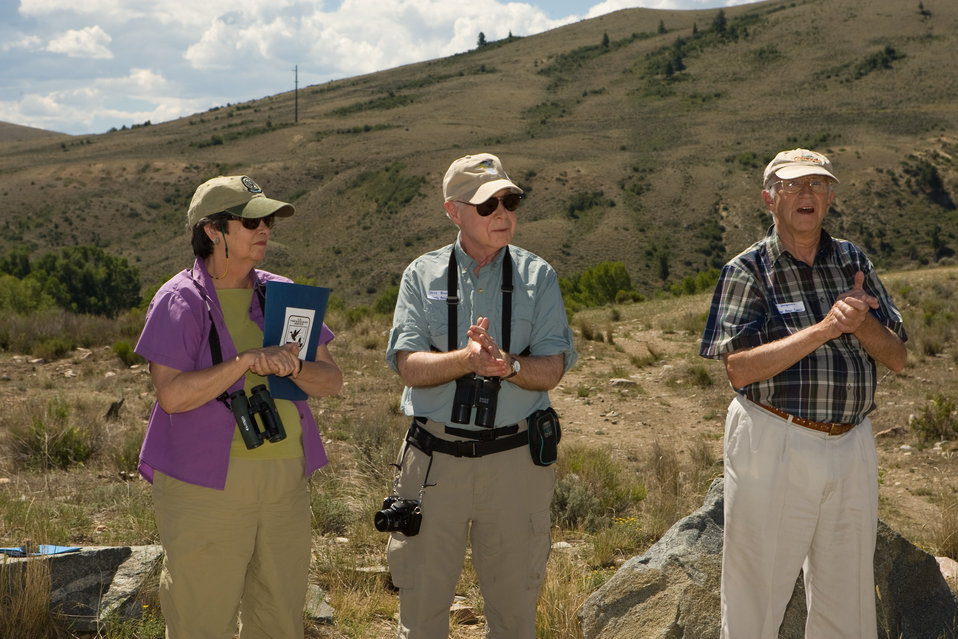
Colorado Rare Plant Conservation Initiative

The Colorado Rare Plant Conservation Initiative (RPCI) is a partnership of 23 statewide and regional agencies, private organizations, and academic institutions working to conserve 121 rare plants in Colorado. As part of these efforts the group developed the Colorado Rare Plant Conservation Strategy, developed Best Management Practices to reduce energy development impacts, addressed climate change, and developed focused strategies for the conservation of individual species at eight priority landscapes. The group has also worked to coordinate volunteer efforts for plant conservation across the state.